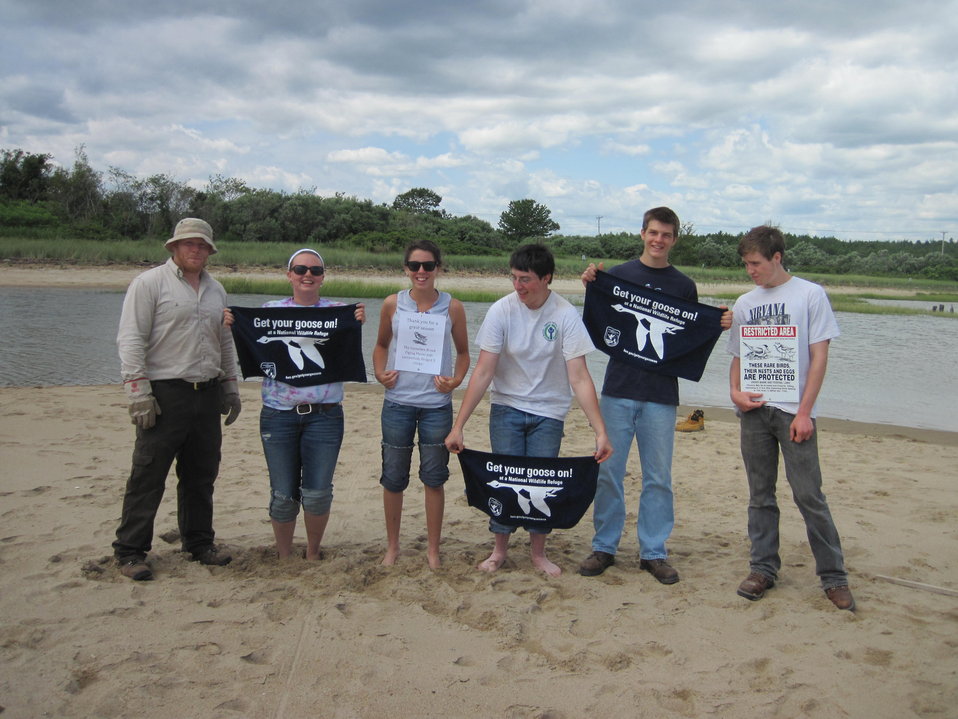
Get Your Goose On!

'We fledged 3 chicks at GFB! Now lets take down the fencing.'